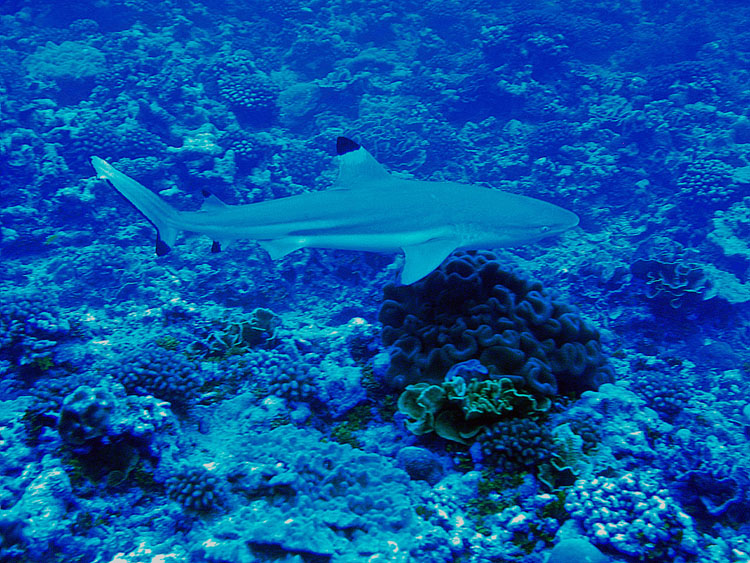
Blacktip shark